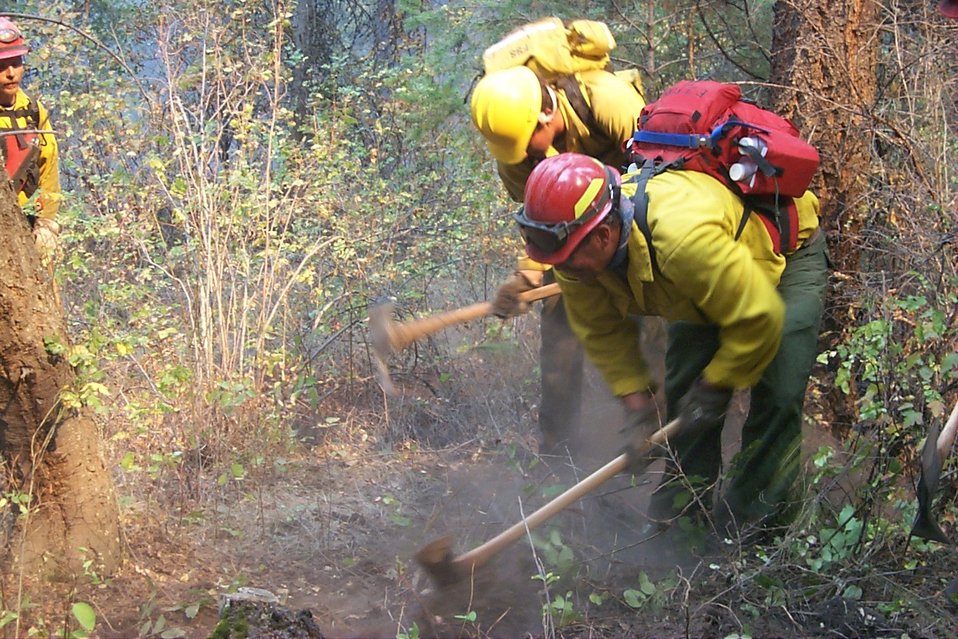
Line crew Fire Clearwater Fire Salmon Field Office USRD Upper Snake River District